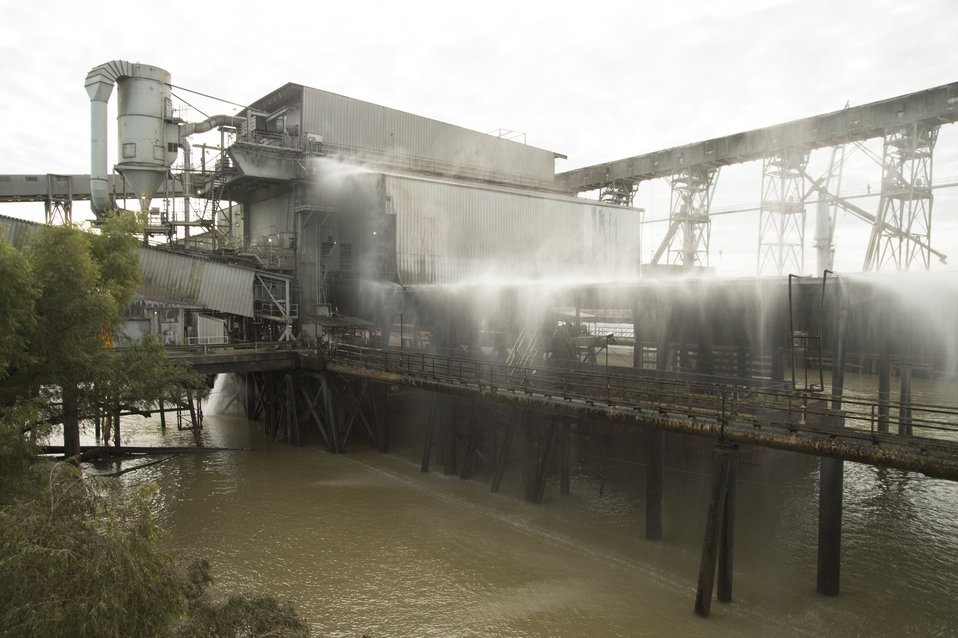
U.S. Department of Agriculture (USDA) Grain Inspection, Packers and Stockyards Administration (GIPSA) Federal Grain Inspection Service (FGIS) grain stations are washed down to cleanse loading and unloading areas and to prevent grain dust buildup near the Port of New Orleans in New Orleans, LA on Tuesday, Nov. 19, 2013.